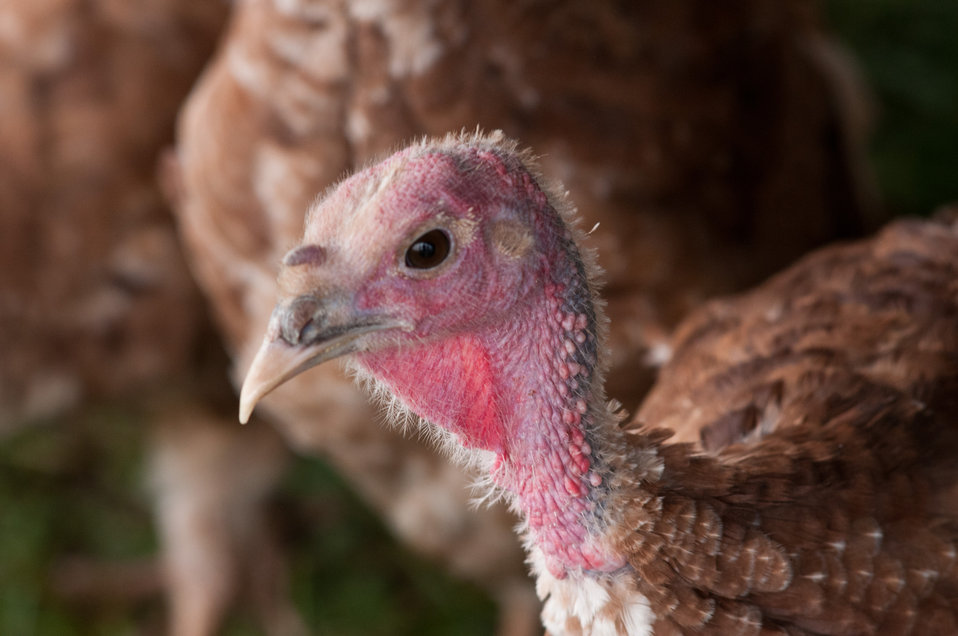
Broiler turkeys graze on organic pastures and live in pens that protect them from predators, direct sun light, and wind at Nick’s Organic Farm, owned by Nick Maravell in Adamstown, MD on Friday, July 12, 2013. The enclosures are light enough to be moved by hand, each day, one consecutive section at a time. This allows the pasture to easily recover from the grazing. The farm produces Black Angus beef, chicken, turkey, eggs, hay, soybeans, corn, alfalfa, orchard grass, rye; and other crops. The cattle are100% grass-fed receiving certified organic pasture, certified organic hay (in winter), water and mineral salts mixed with sea kelp. The cattle are not fed hormones, antibiotics or animal products. Poultry feed from grain is ground from organic grain. The poultry also graze on organic pastures. The farm has conducted on-farm research with federal, state and non-profit agencies to refine organic practices. An organization such as the U.S. Department of Agriculture (USDA) Agricultural Research Service (ARS) center in Beltsville has been able to conduct research to improve organic crops and to breed and manage the cattle so that they have.